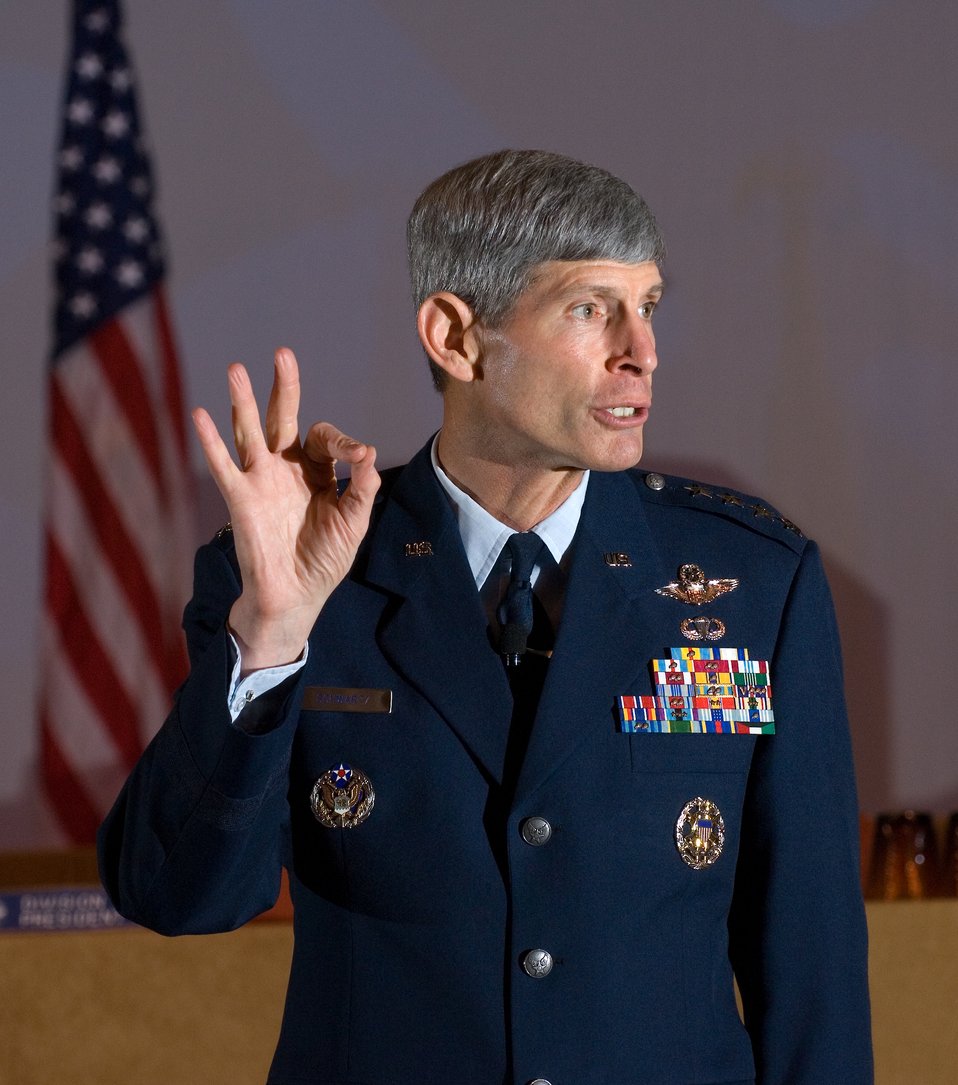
Air Force chief of staff discusses leadership goals

Gen. Norton Schwartz, Air Force chief of staff, talks about his objectives to remedy problems in today's Air Force during his keynote speech Aug. 25 at the Air Force Sergeants Association's annual Professional Airmen's Conference and International Convention in San Antonio.